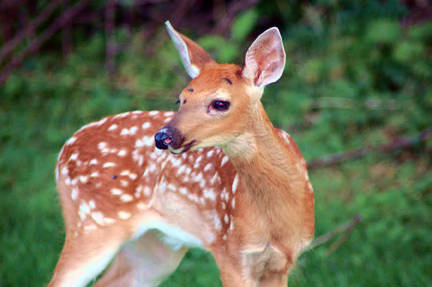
red deer fawn